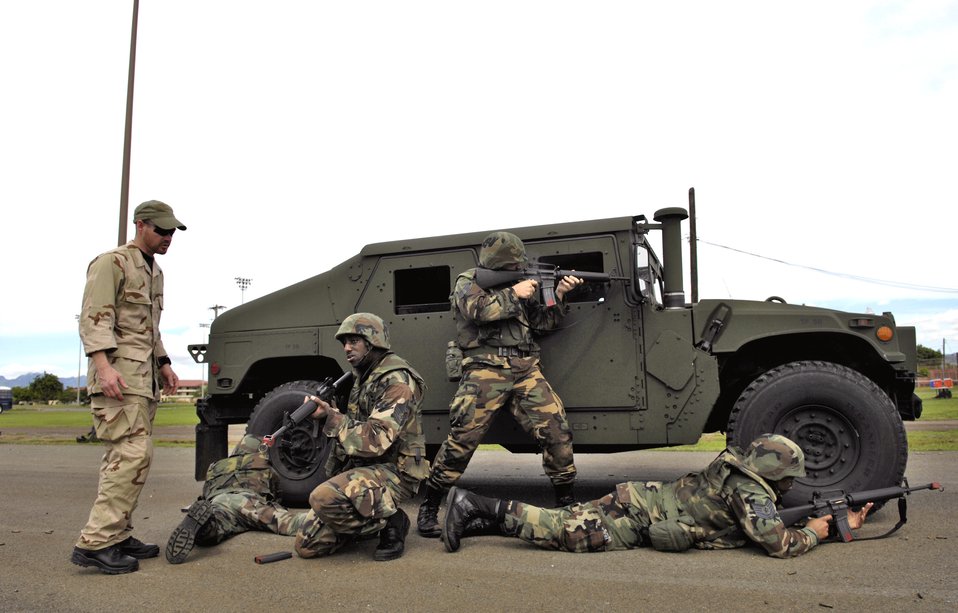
Combat course prepares Airmen for AEF

Instructor Jack Anderson watches Airmen from the 15th Airlift Wing return fire during convoy training Nov. 3 at a 3-day Expeditionary Combat Skills training course at Hickam Air Force Base, Hawaii. The Airmen are preparing for the Air Expeditionary Force 5/6 cycle.